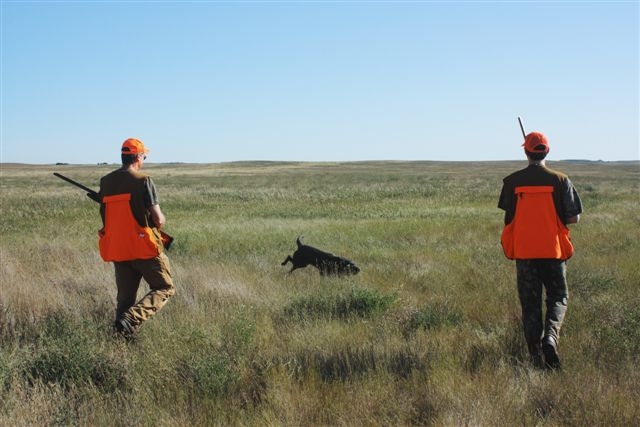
Lostwood National Wildlife Refuge

A pair of hunters on Lostwood Wetlands Management District in North Dakota.